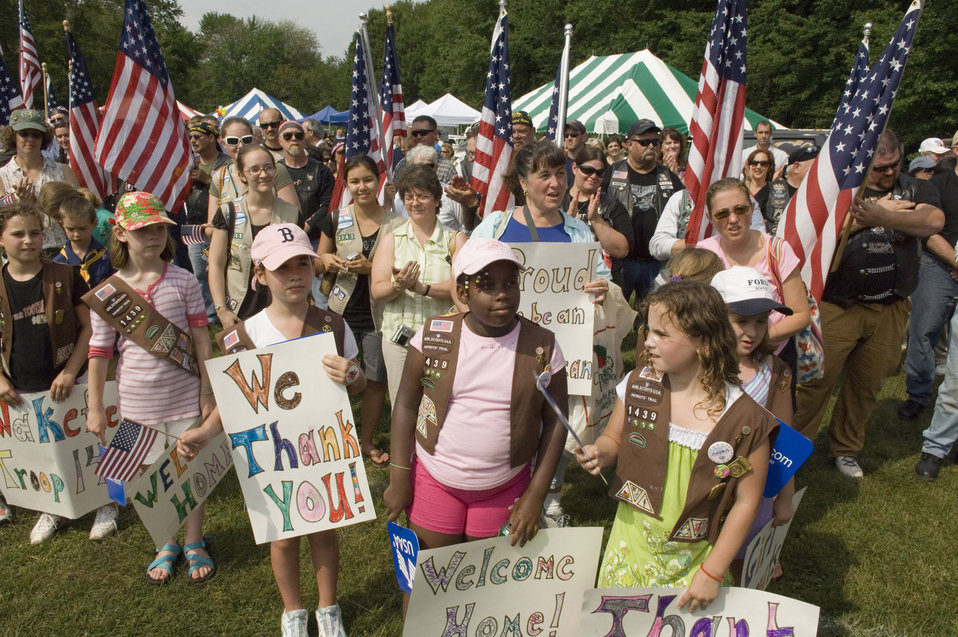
Welcome home

As part of a hero's homecoming celebration, Girl Scouts from across eastern Massachusetts welcome home Airmen June 27 from Hanscom Air Force Base, Mass. Earlier this year, hundreds of Girl Scouts delivered about 10,000 boxes of Girl Scout cookies to send to deployed military around the world.